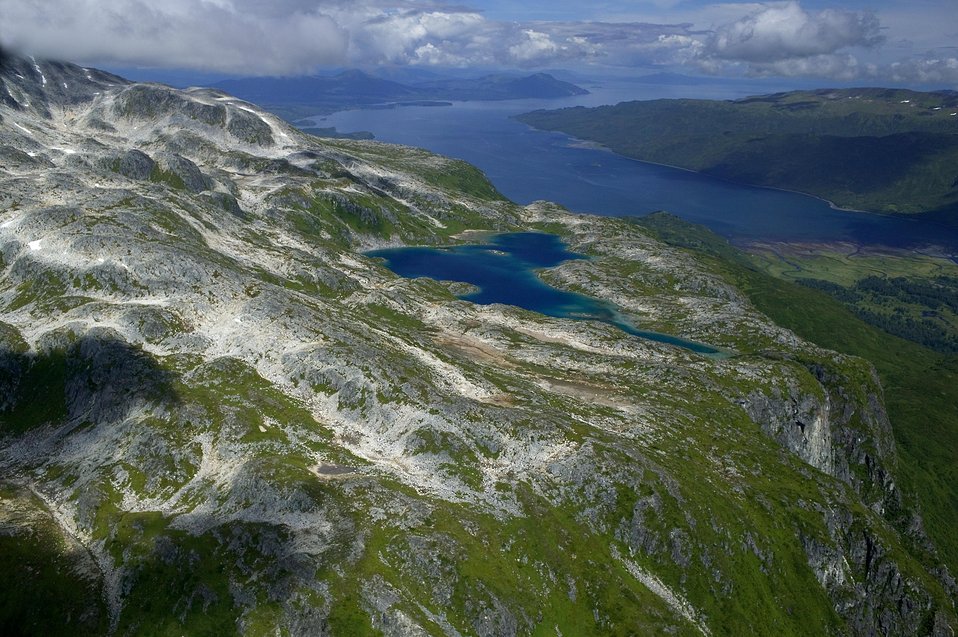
KOD Hildebrand (1)

Kodiak National Wildlife Refuge- Wildlife